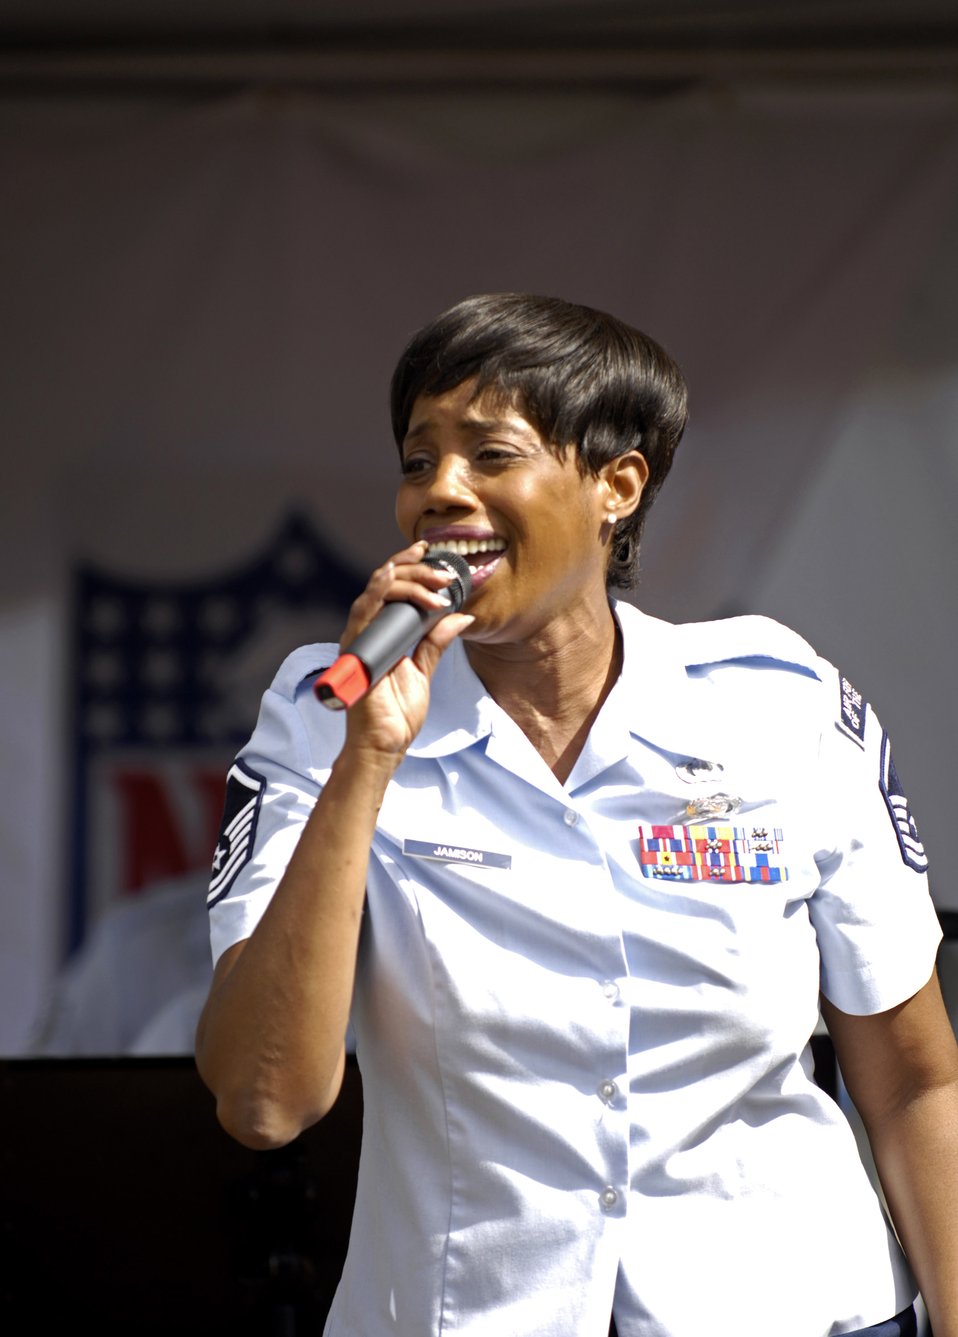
Pro Bowl Airmen

Master Sgt. Debra Jamison sings to a 2007 Pro Bowl crowd during pre-game festivities in the parking lot Feb. 10 at Aloha Stadium in Hawaii. Sergeant Jamison is from the Pacific Air Forces Band. Servicemembers from all branches of the U.S. military in Hawaii participated in Pro Bowl activities. The Pro Bowl brings together the top players in the National Football League.